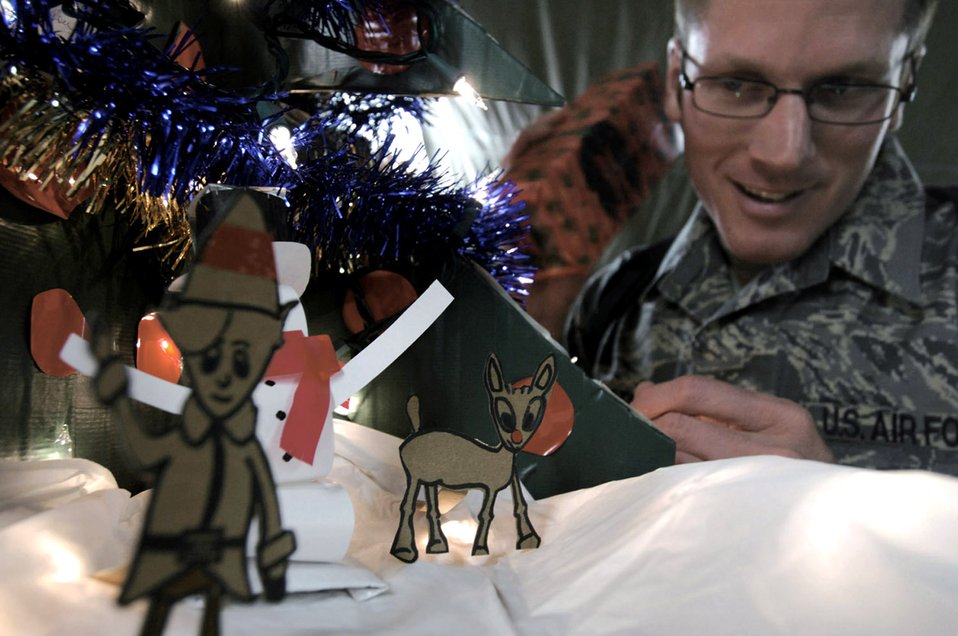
Working on a winter wonderland

Tech. Sgt. Ryan McMaster looks at cartoon characters he created in a holiday diorama made from locally-procured materials Dec. 14 at Bagram Air Base, Afghanistan. Sergeant McMaster is with the 774th Expeditionary Airlift Squadron.